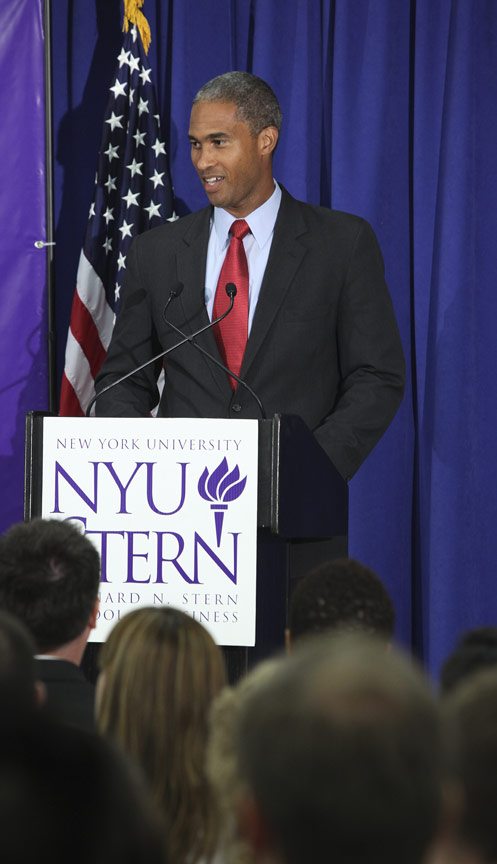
Secretary Geithner Delivers Remarks on Financial Reform at NYU, 8/2/2010

Dean of NYU’s Stern School of Business Peter Blair Henry introduced the Secretary.